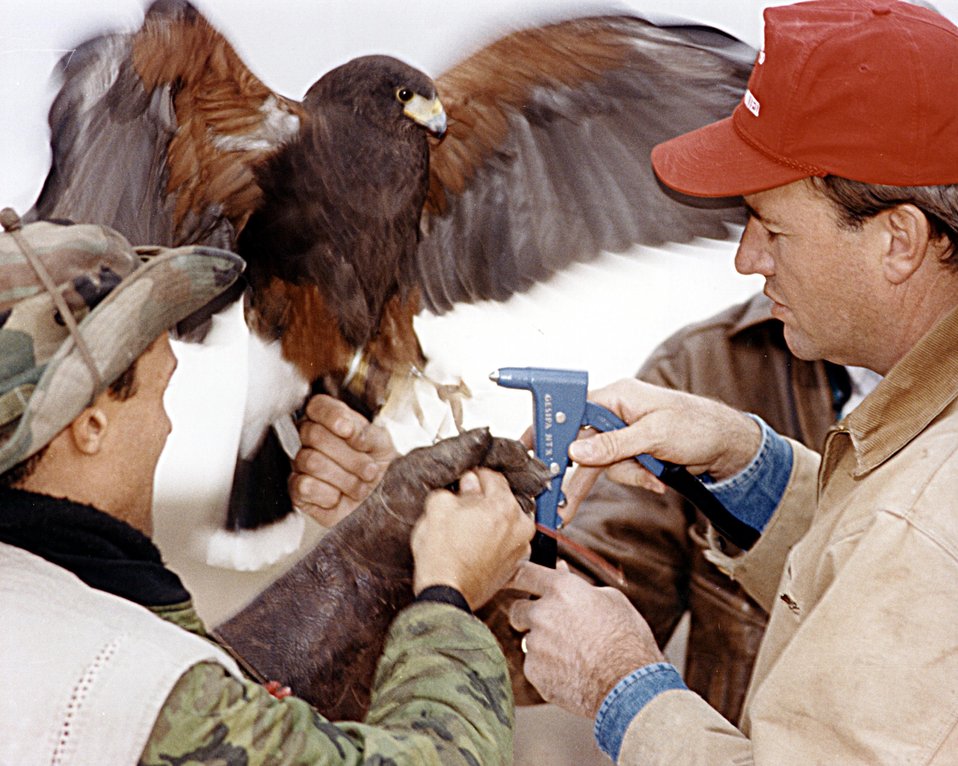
BANDING BIRDS OF PREY.

PERSONNEL ARE BANDING BIRDS OF PREY AND STUDYING RAPTOR BEHAVIOR IN THE DESERT SURROUNDING THE WASTE ISOLATION PILOT PLANT. THE WIPP IS A DOE RESEARCH AND DEVELOPMENT FACILITY DESIGNED TO DEMONSTRATE THE SAFE DISPOSAL OF DEFENSE RADIOACTIVE WASTE IN ANCIENT SALT BEDS.